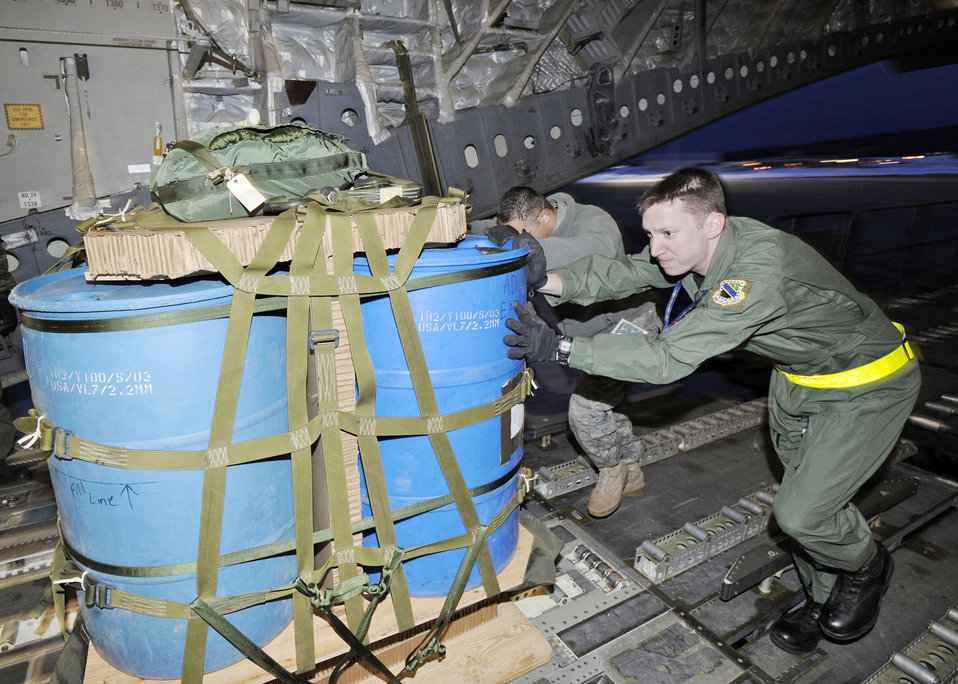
Elmendorf Airmen complete airdrop using 3-D weather technology

Staff Sgt. Chris McKnight and members of the 517th Aircraft Maintenance Unit load a water crate onto a C-17 Globemaster III March 19, 2010, at Elmendorf Air Force Base, Alaska. Sergeant McKnight and his crew from the 517th Airlift Squadron participated in a combat simulation improved container delivery drop over Tin City, Alaska.